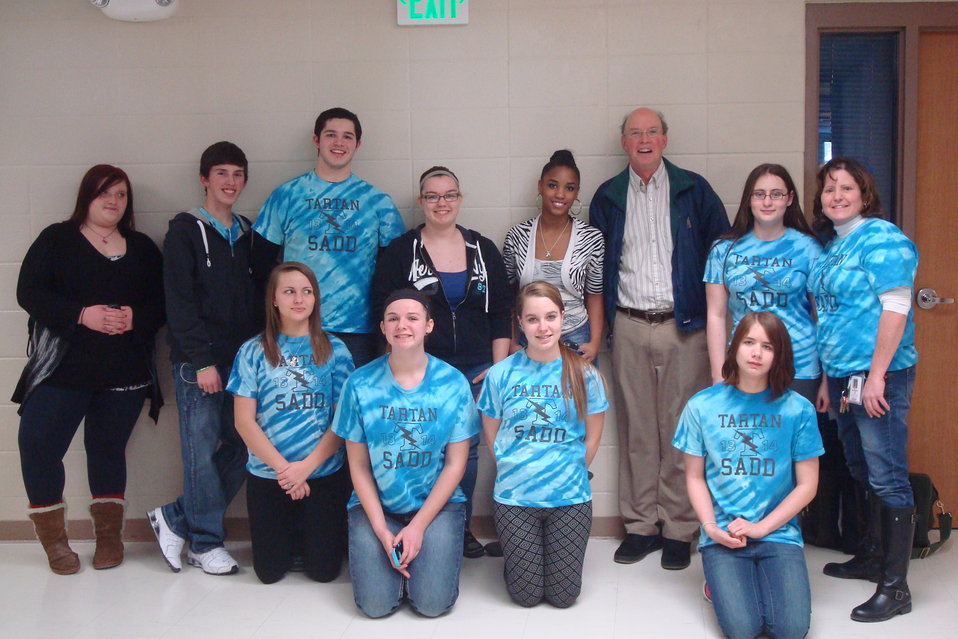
Tartan Teens Participate in NDFW

Students Against Destructive Decisions (SADD) hosted an assembly with guest speaker Dr. Ken Winters of the Center for Adolescent Substance Abuse Research (CASAR) at the University of Minnesota, as part of SADD's 'Signature Event' in Oakdale, Minnesota